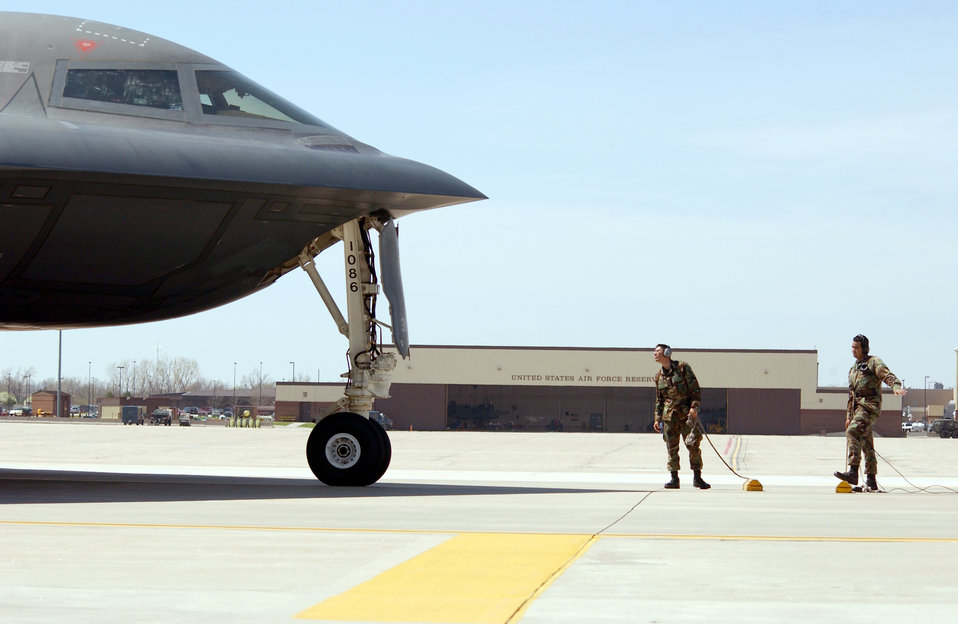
Spirit of Kitty Hawk

OPERATION IRAQI FREEDOM -- Airman First Class Angel Unate (left) and Senior Airman Alex Rodriquez wait to chalk the front gear of their B-2, the